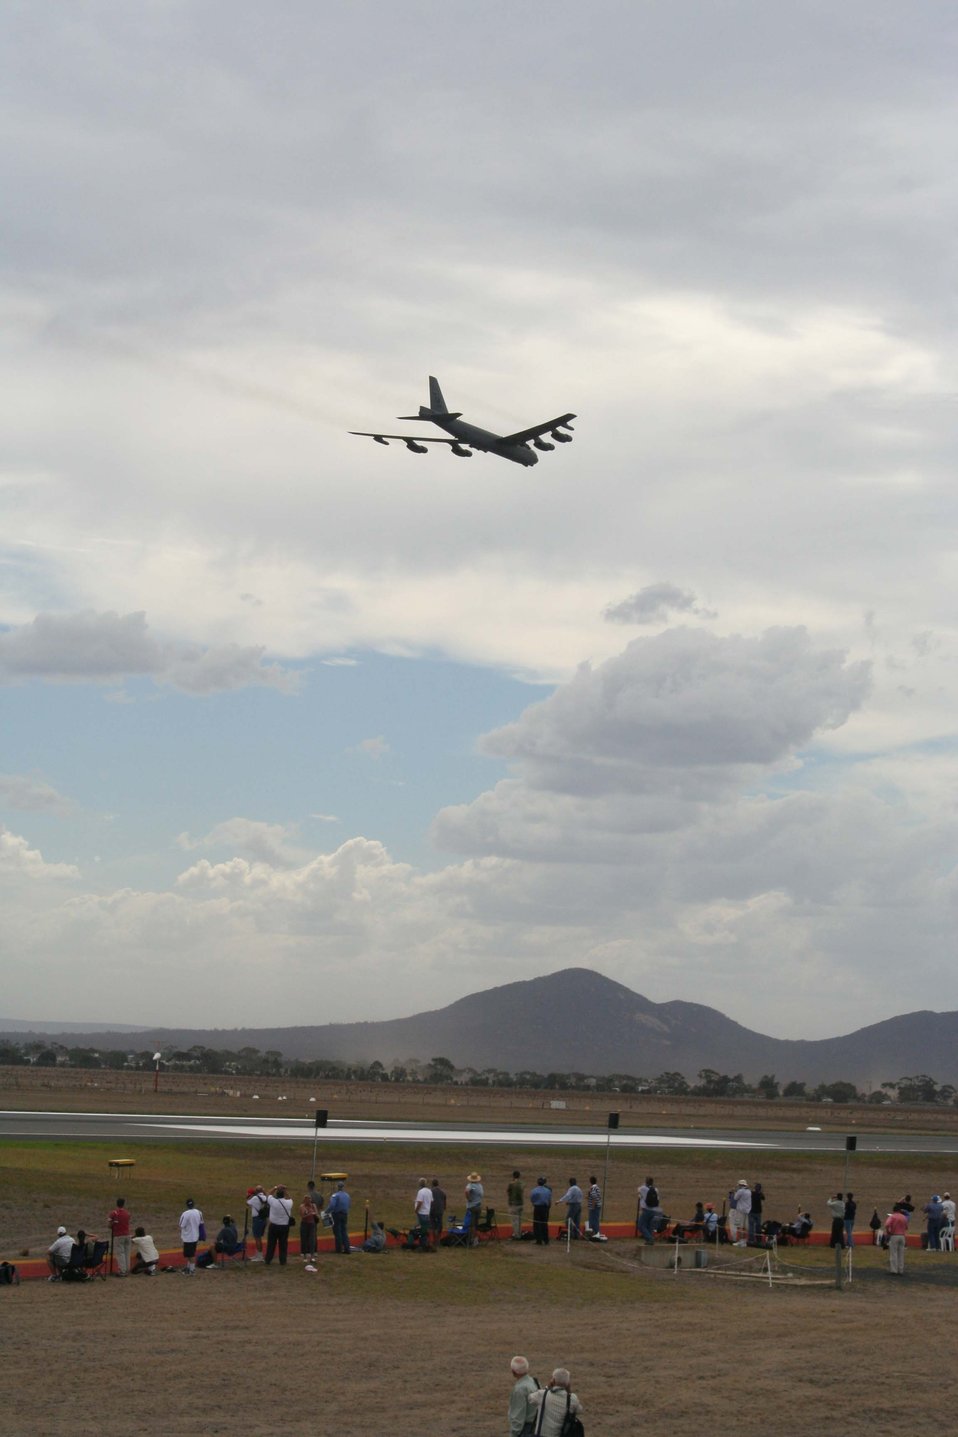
B-52s participate in Green Lightning, Australian air show

A B-52 Stratofortress flies over the flightline at Avalon Airport March 24 in support of the Australian International Airshow 2007. B-52s are deployed from Barksdale Air Force Base, La., to Andersen Air Base, Guam, as part of the Pacific Command's continuous bomber presence in the Pacific region. One B-52 flew to the Darwin Airport in northern Australia to perform in support of the air show.